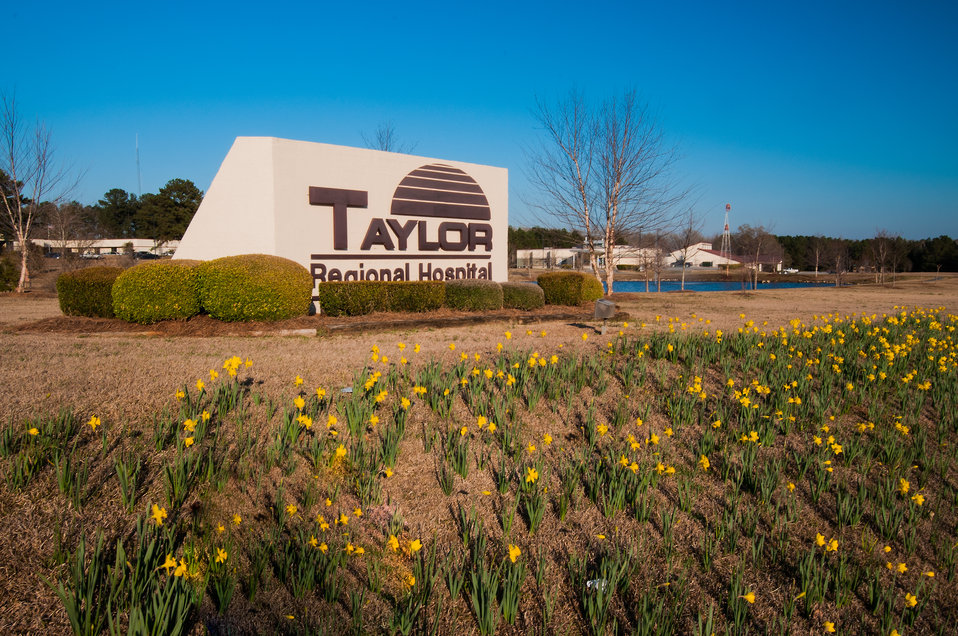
The R.J. Taylor Memorial Hospital on a sunny day in Hawkinsville, Pulaski County, GA on Mar. 6, 2013. This is the hospital’s main location and the facility is a licensed private, not-for-profit acute care facility providing emergency, specialty and primary health care. There is a second hospital located in Bleckly County, GA which provides services to residents in these two very rural counties of Georgia. These counties have a high percentage of people living below the state average poverty level and are considered the most economically distressed. The hospital has purchased an Electronic Medical Records System under an incentive program by the Federal government through the U.S. Department of Agriculture (USDA) Rural Development (RD) Community Facilities Loan (CF) that ensures fiscally responsive access to superior quality integrated health care.